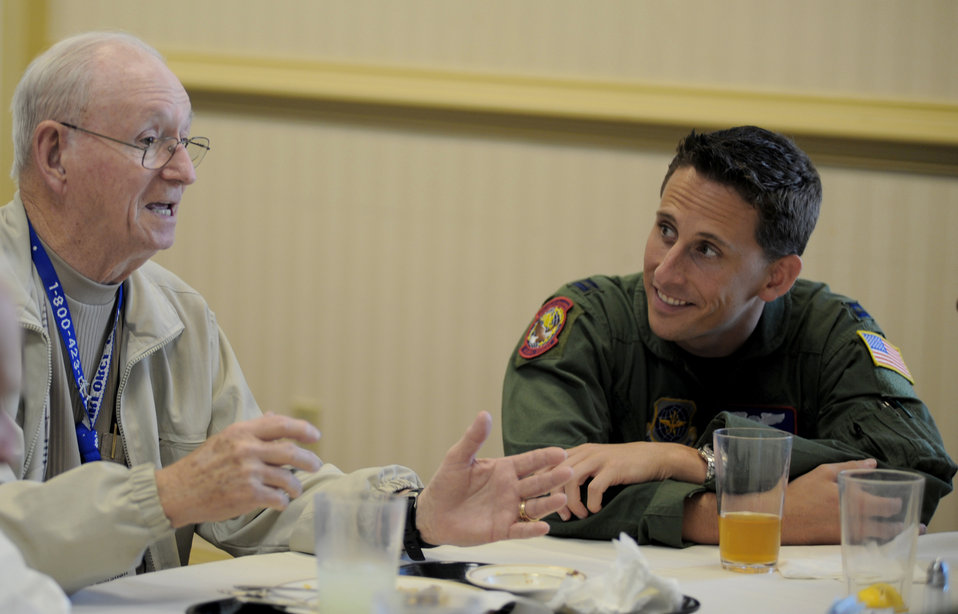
'Hump' pilots mark 65th reunion

Don Marshall shares one of his World War II stories with Capt. John McDaniel during lunch May 5, 2011, at Joint Base Charleston, S.C. Mr. Marshall was attending the World War II